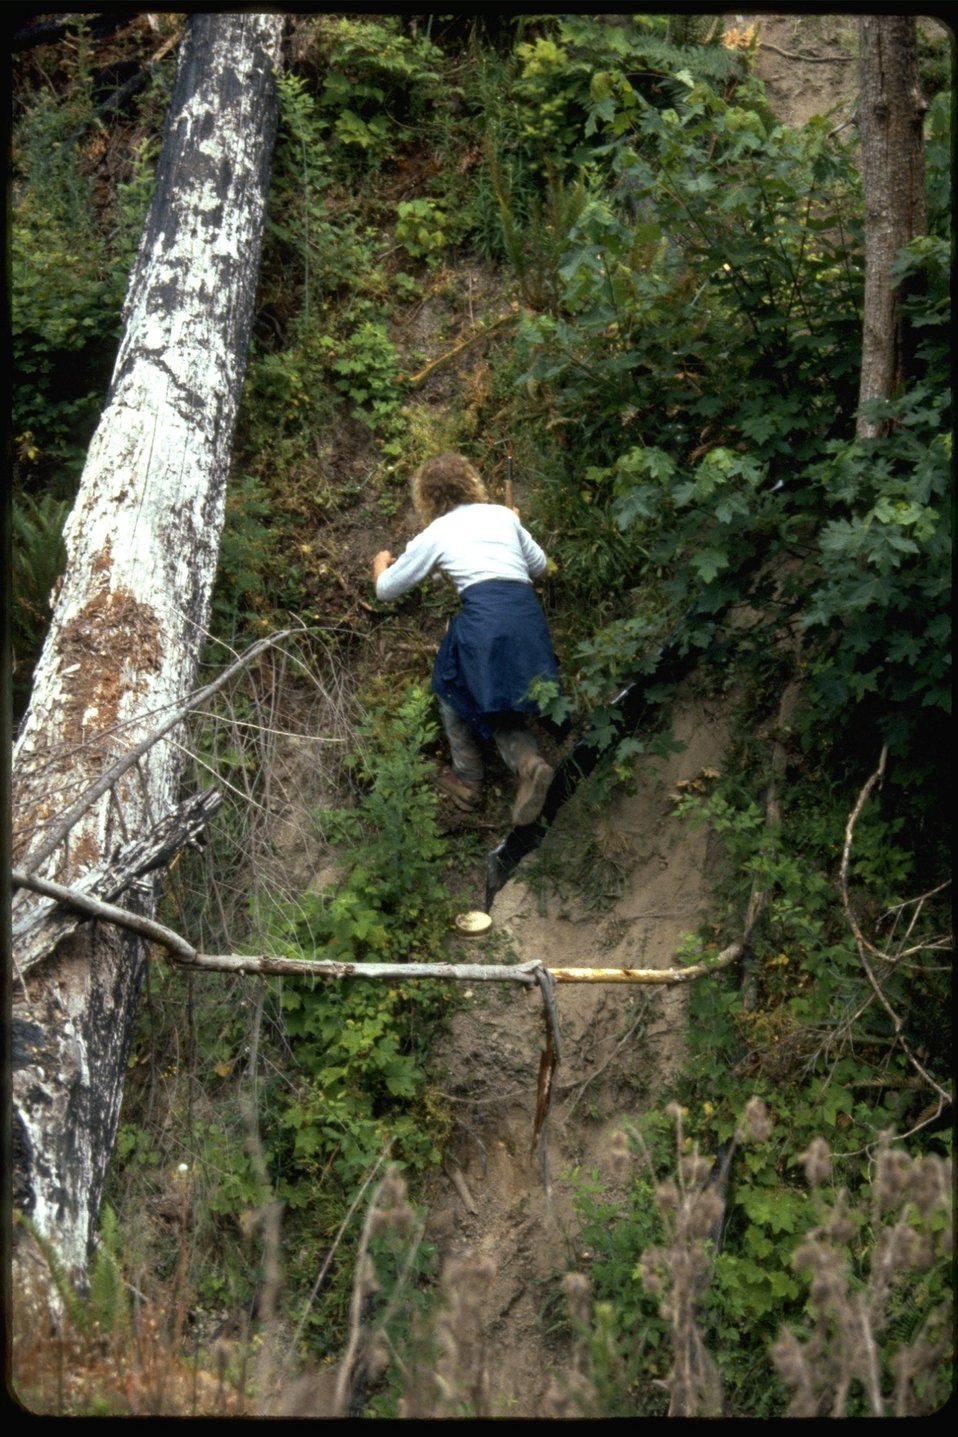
Craig working in clear cut.